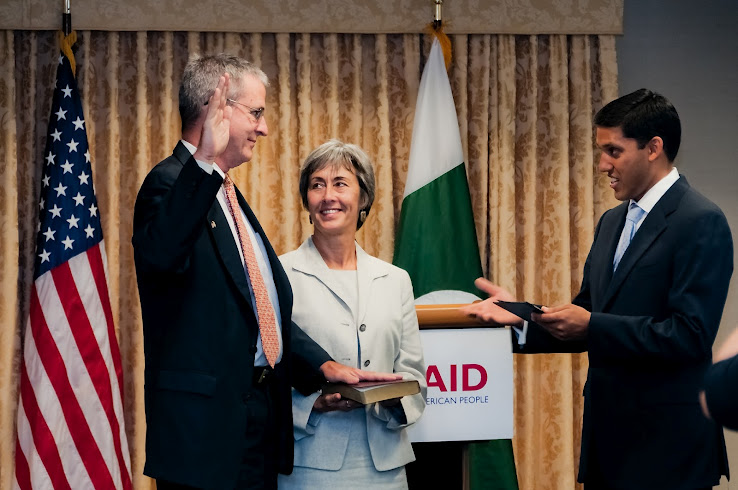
Jonathan Conly

WASHINGTON, D.C. – This week, Jonathan Conly was sworn in as the new U.S. Agency for International Development (USAID) Country Director for Pakistan. USAID Administrator Dr. Rajiv Shah presided over the ceremony and administered the oath in the presence of Mr. Conly’s family, friends, and colleagues, as well as members of the Pakistani-American community and the Pakistan Embassy’s Deputy Chief of Mission, Dr. Asad Majeed Khan.